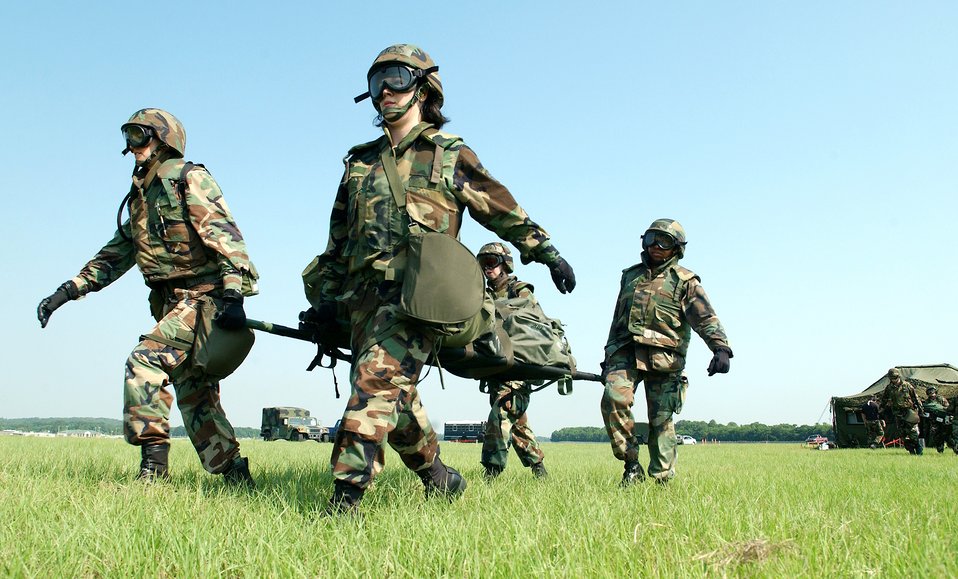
Airmen, Soldiers polish skills at Golden Medic

Airmen carry a litter of equipment from the mobile aeromedical staging facility to a C-130 Hercules at Augusta Regional Airport, Ga., on Saturday, June 17, as part of Golden Medic 2006. The annual medical exercise involves medical servicemembers from various military branches, including the Air Force and Army this year.